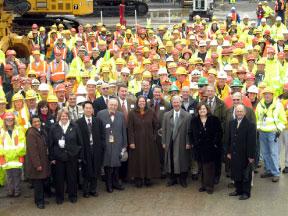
K-25 demolition

Working together in a team effort, craft workers, Department of Energy officials, and Tennessee state federal regulators pause prior to the start of demolition work for the K-25 Building in Oak Ridge.